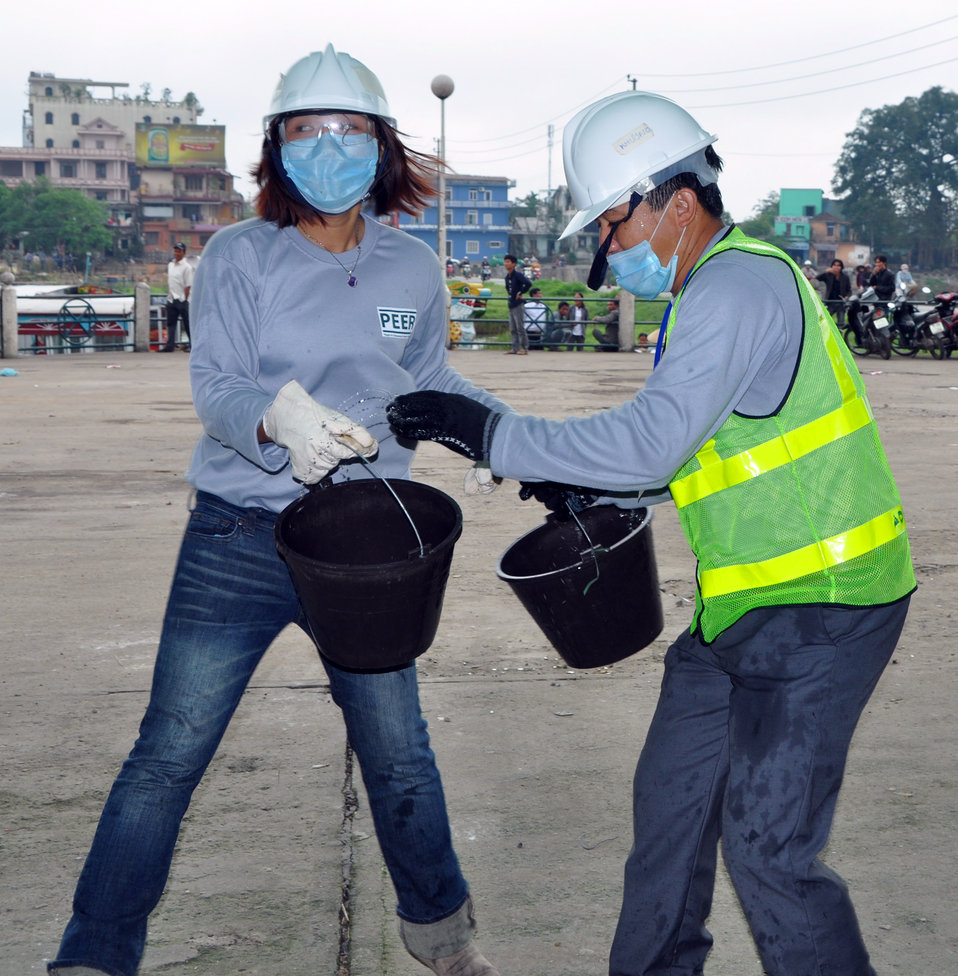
Disaster and Emergency Training Funded by USAID in Hue, Vietnam